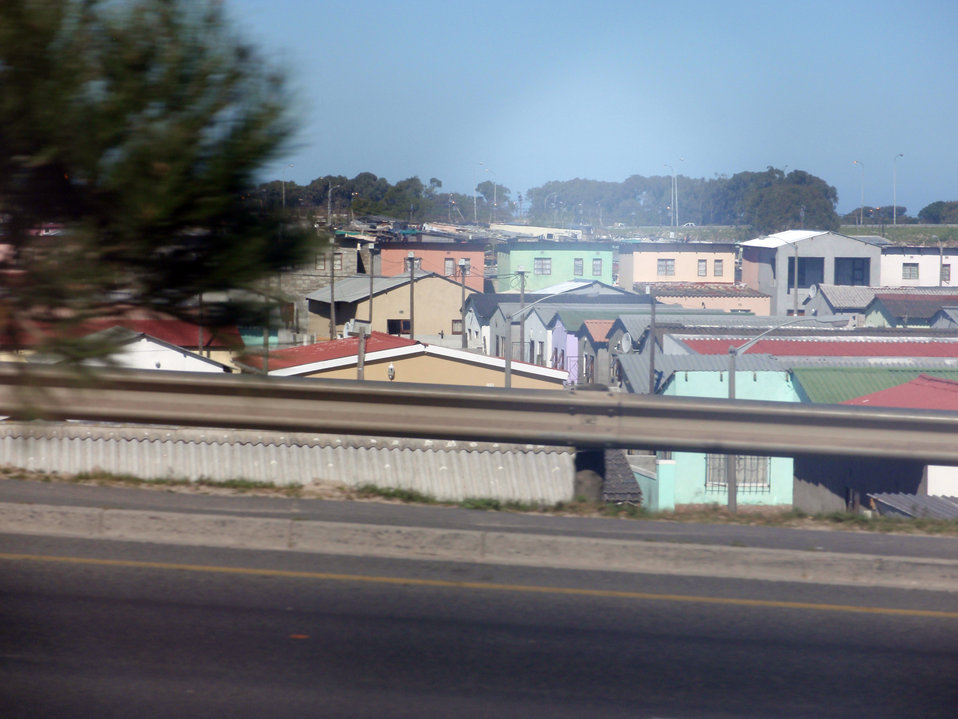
Behind the Scenes: Secretary Clinton Visits Victoria Mxenge Housing Development

Photo taken from the press bus enroute to the Victoria Mxenge Housing Development in Cape Town South Africa before a visit by U.S. Secretary of State Hillary Rodham Clinton in Cape Town, South Africa August 8, 2009.